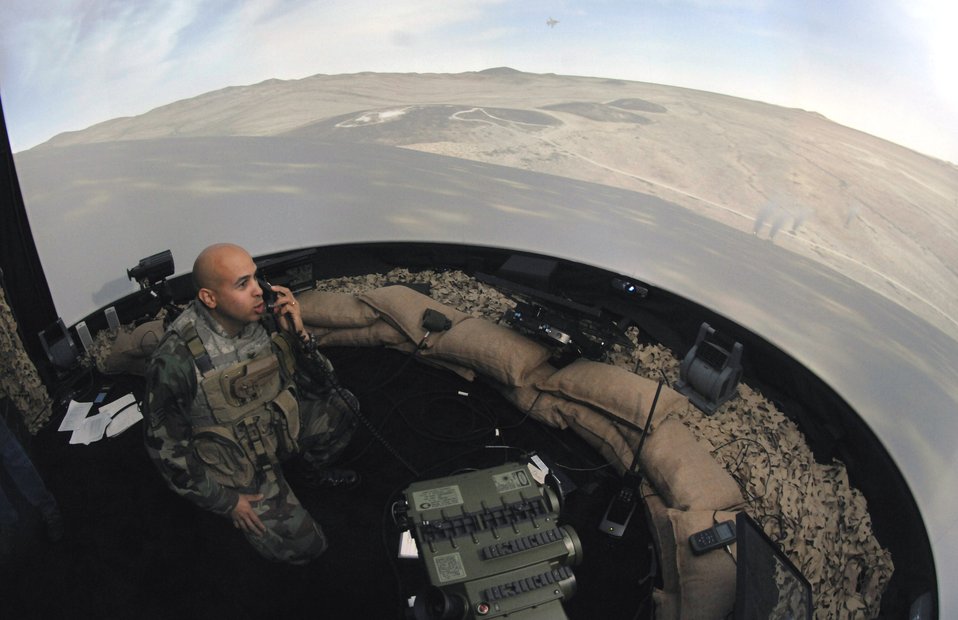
Conference makes virtual training a reality

Staff Sgt. Dennis Krouse calls in close-air support Nov. 28 during a simulation at the Interservice/Industry Training, Simulation and Education Conference in Orlando, Fla. Sergeant Krouse is a joint terminal attack controller stationed at Fort Hood, Texas.